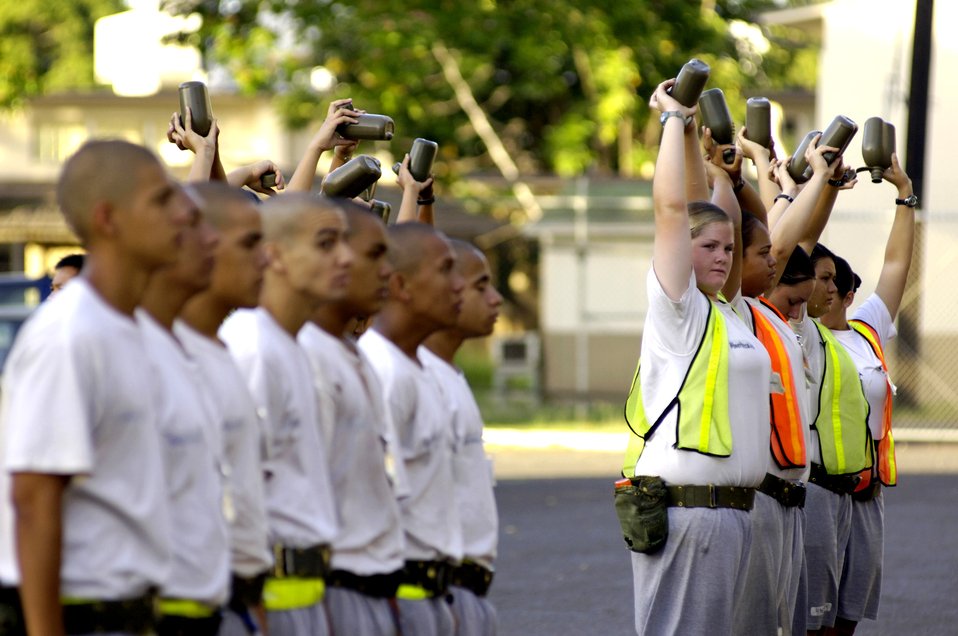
National Guard program helps at-risk teens

Cadets hold their canteens over their heads to show they finished all their water at the Hawaii National Guard Youth Challenge Academy in Kapolei, Hawaii, on Thursday, May 18, 2006. The academy staff teach life skills to non-traditional students so they can be successful in the community and earn a high school diploma.